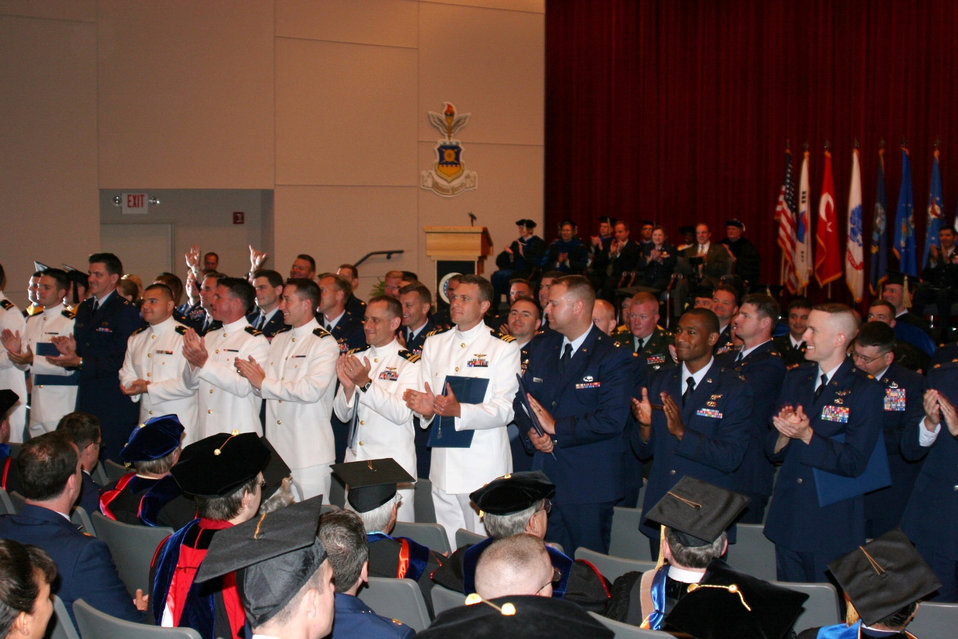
AFIT Class of 2008 graduates

The members of the Air Force Institute of Technology's 2008 graduating class thank their family, friends and faculty members for support. Seventy two students were graduated during a ceremony June 19.